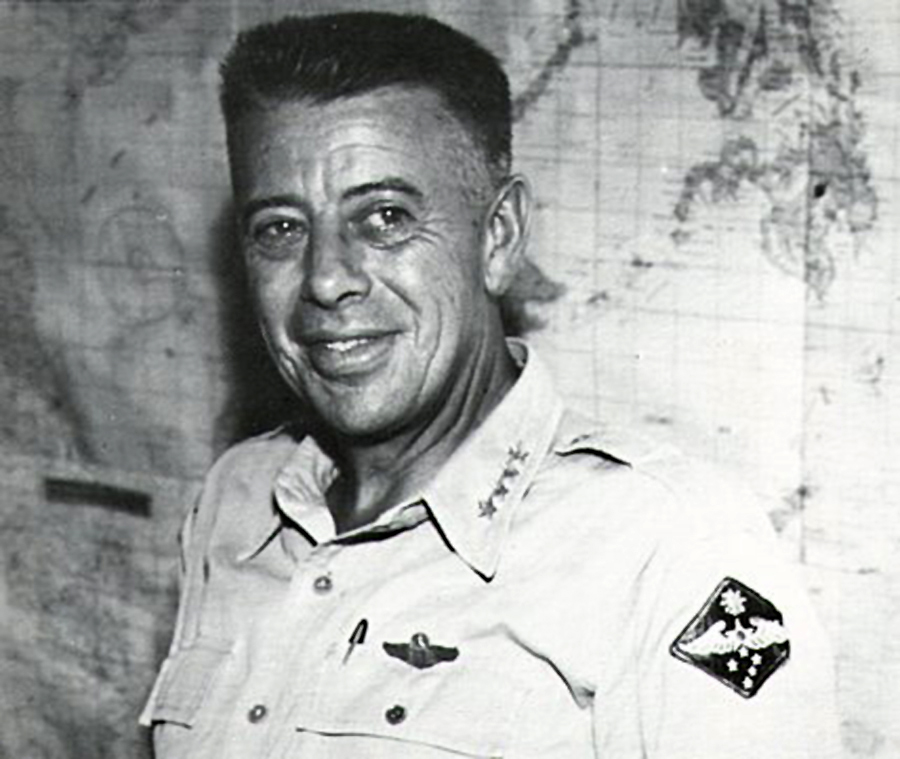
PACAF officials establish warfighting headquarters

FILE PHOTO -- In July 1942, Gen. George C. Kenney was the Allied Air Forces commanding general in the Southwest Pacific and Fifth Air Force commanding general, joining Gen. Douglas MacArthur as his top air officer. He died in 1977. Pacific Air Forces officials established the George C. Kenney Headquarters (Provisional) at Hickam Air Force Base, Hawaii, on June 1. The headquarters will focus exclusively on planning and executing military operations throughout the Pacific theater, excluding the Korean Peninsula.